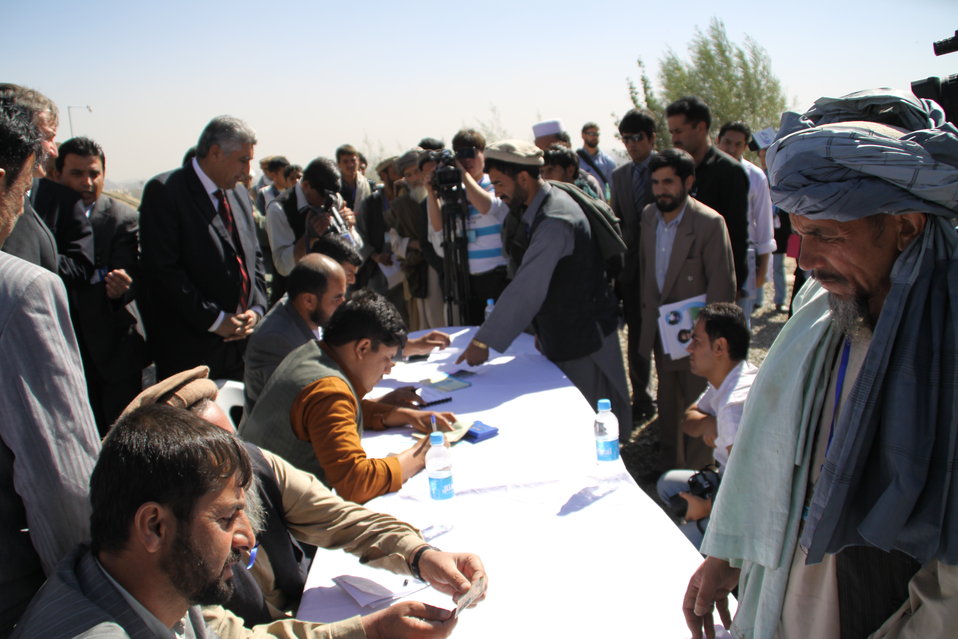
AVIPA Plus Wheat Seed Distribution 101005

US Ambassador Karl Eikenberry and USAID Acting Mission Director Kevin Brownawell joined the Minister of Agriculture, Irrigation and Livestock, H.E. Minister Mohammed Rahimi in signing a Memorandum of Understanding and distributing vouchers to area farmers for wheat and fertilizer.

US Ambassador Karl Eikenberry and USAID Acting Mission Director Kevin Brownawell joined the Minister of Agriculture, Irrigation and Livestock, H.E. Minister Mohammed Rahimi in signing a Memorandum of Understanding and distributing vouchers to area farmers for wheat and fertilizer.